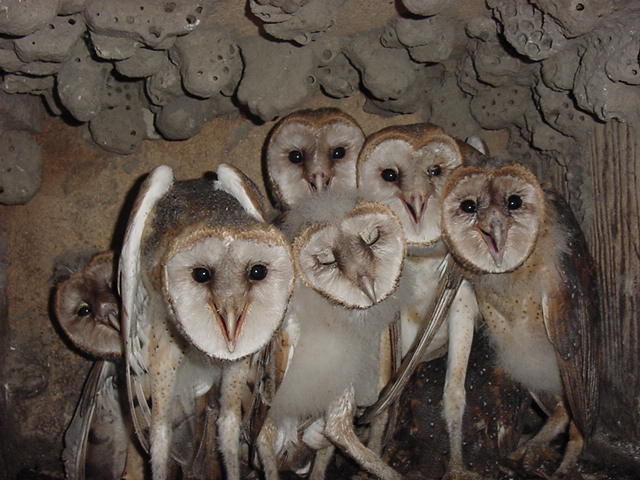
Barn Owl

Barn Owls (Tyto alba) have excellent night vision, but experiments have shown that they can catch their prey using acoustic location alone. Their unique facial disks allow them to localize sounds, enabling them to pinpoint prey location and its direction of movement. These Barn Owls were hatched on the refuge in 2003.